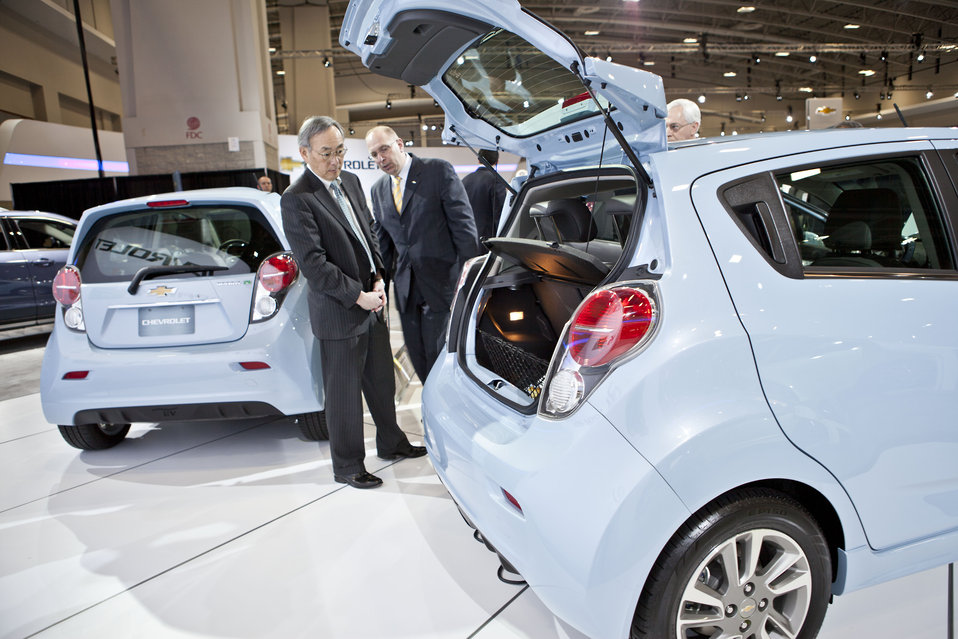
Energy Secretary Steven Chu discusses some of the features of the Chevy Spark with the Chevy representative.